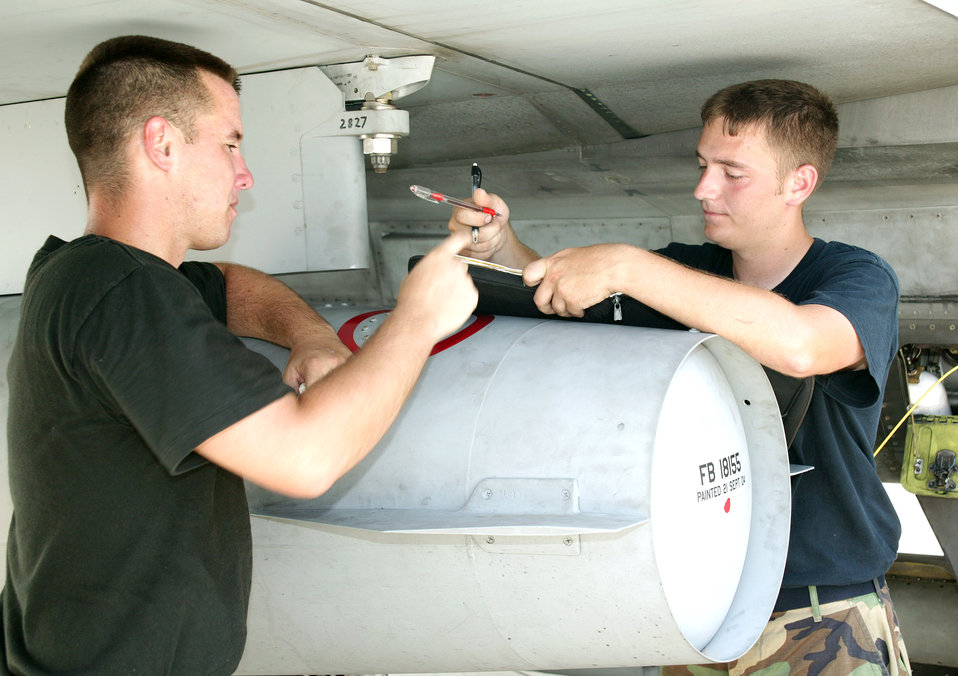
Shaw F-16s intercept shuttle airspace violater

SHAW AIR FORCE BASE, S.C. -- Senior Airmen Stephen Yarbrough (left) and Mark Main sign in an F-16 Fighting Falcon after returning from Cape Canaveral, Fla., following the July 26 launch of the Space Shuttle Discovery. The jet was one of six F-16s from here protecting the airspace around the launch site. The Airmen are crew chiefs with the 55th Aircraft Maintenance Unit.